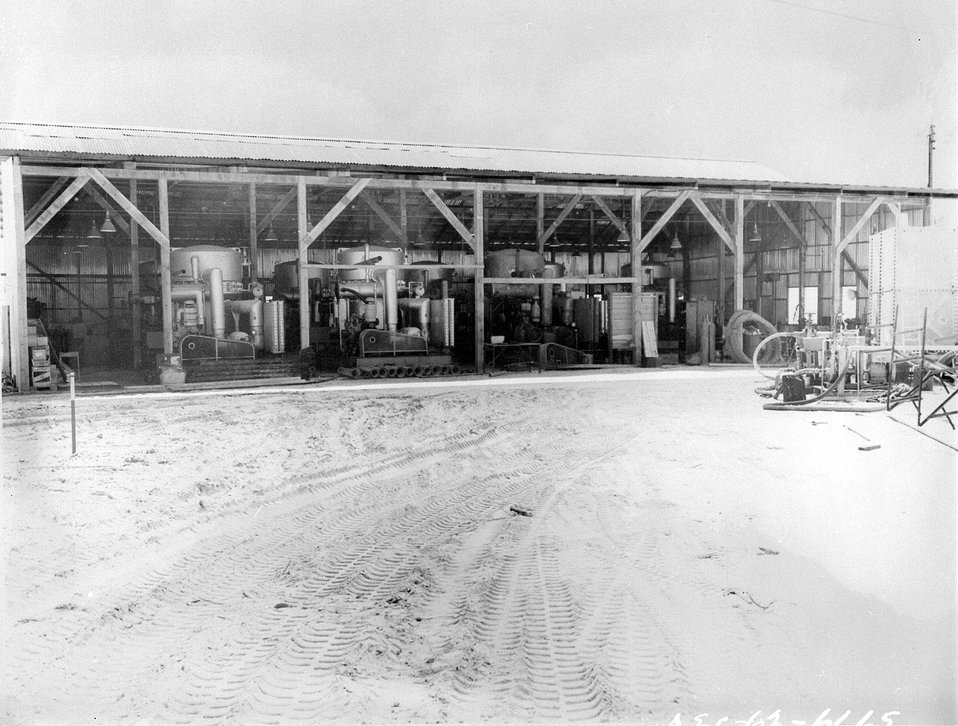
Christmas Island